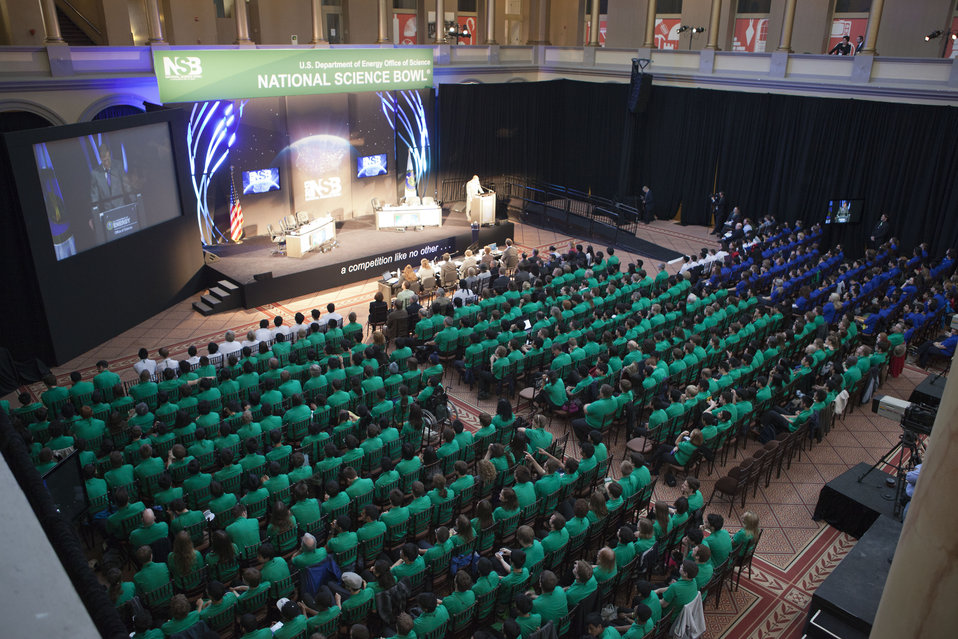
National Science Bowl

The final rounds of competition for the 2013 National Science Bowl took place at the National Building Museum, Monday, April 29, 2013, in Washington, DC.